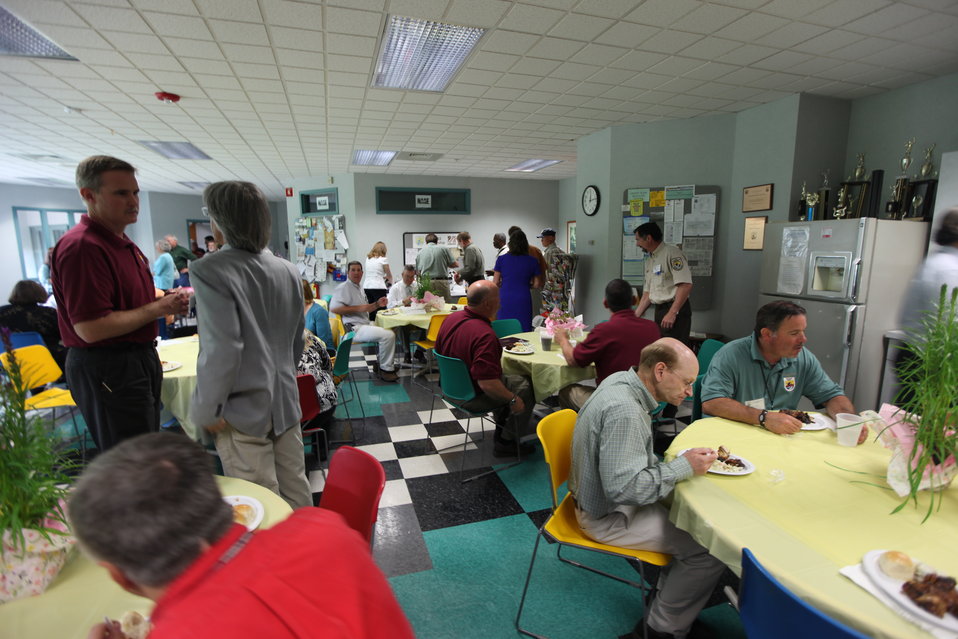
Northeast Region Employee Appreciation Awards

Luncheon